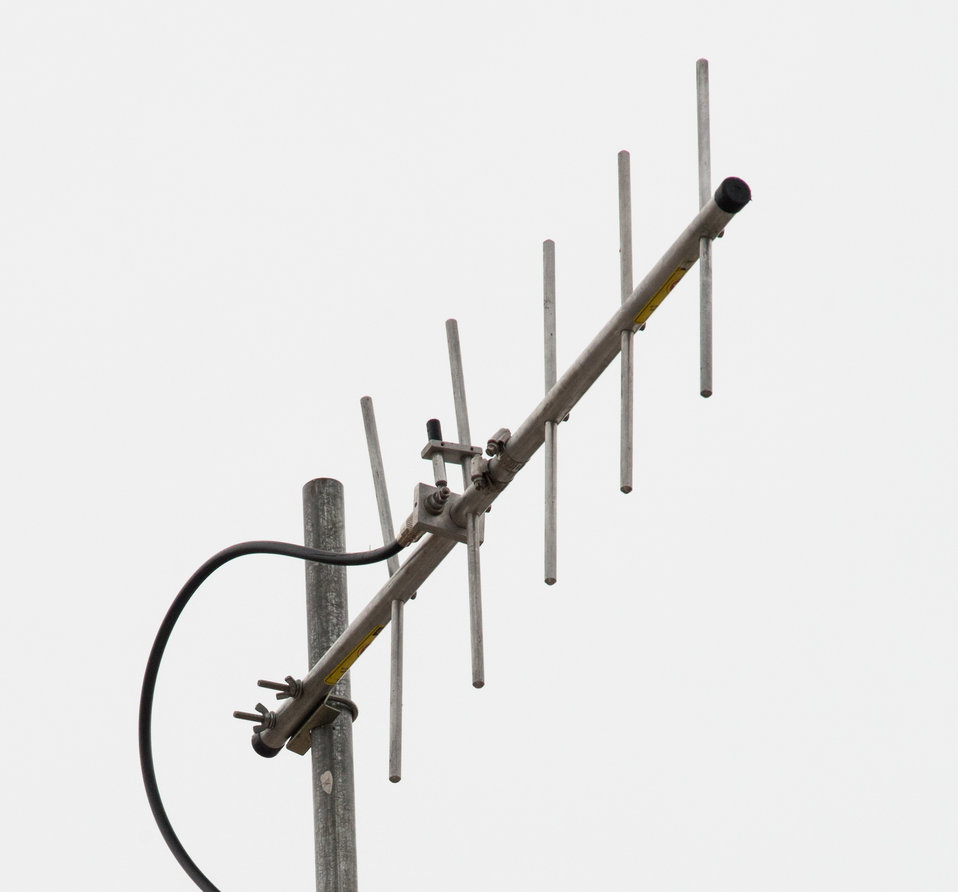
Communications antenna from the National Interagency Fire Center's National Interagency Incident Communications Division, in Boise, ID, in use at the Big Windy Complex Wildlands Fire, Incident Command Post (ICP) in Merlin, OR on Friday, Aug 9, 2013. The fire center is approximately 15 miles west of Interstate-5 and East Northeast of Galice, Oregon.